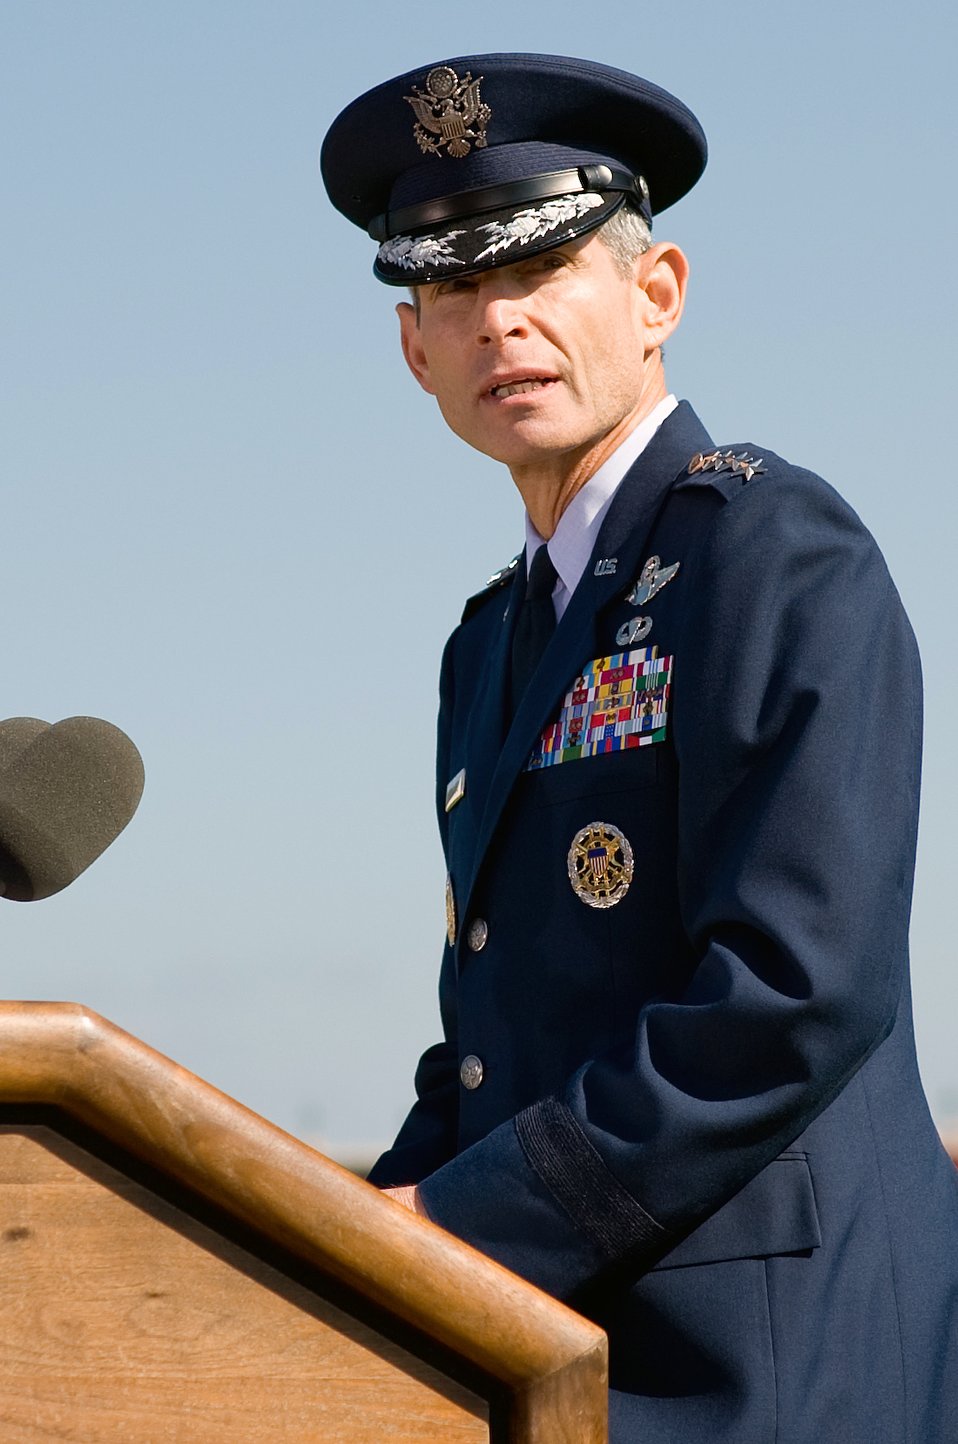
Message for Airman

Gen. Norton A. Schwartz, sworn in Aug. 12 as the 19th Air Force chief of staff, has a message for Airmen: Be proud!